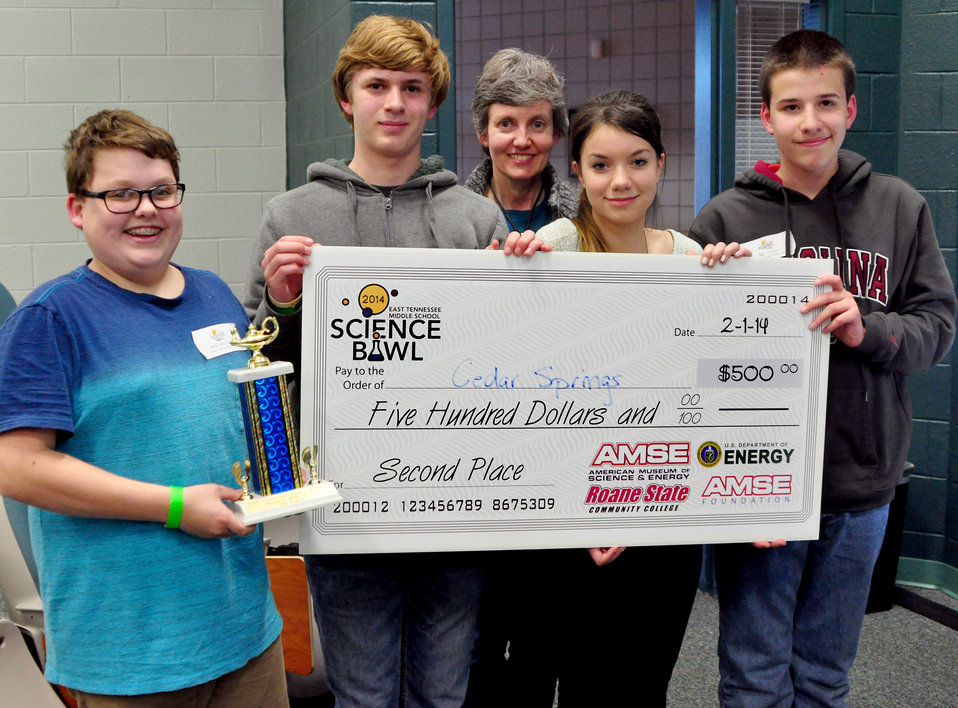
Cedar Springs Home School Association Second Place DOE Middle School Science Bowl

14-017 DOE photo Lynn Freeny 2-1-2014 Oak Ridge Tennessee